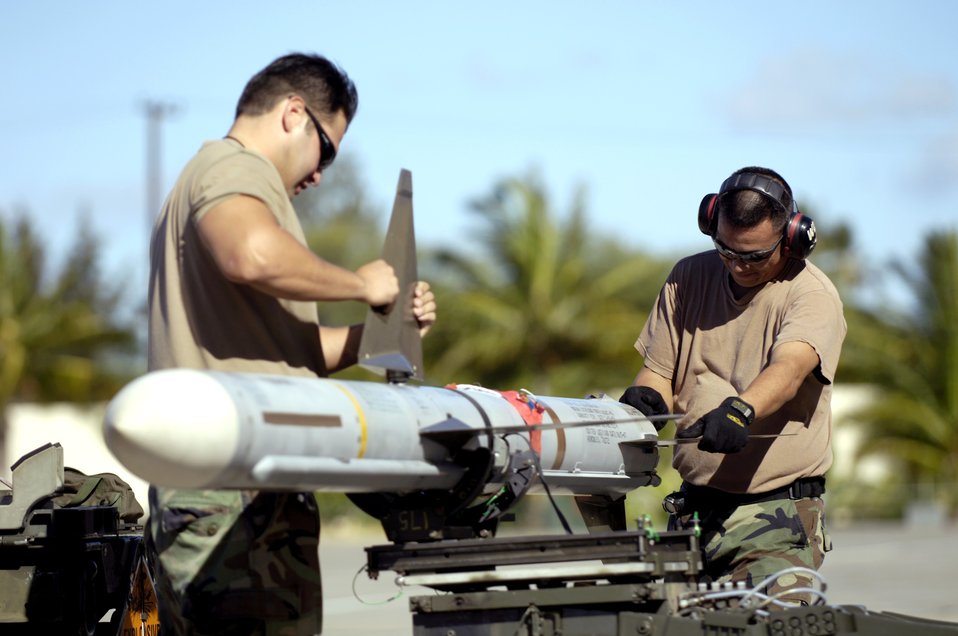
Total force at work in RIMPAC

Staff Sgt. Gabriel Coronado and Staff Sgt. Arthur Hamabata install the wings and fins on an AIM-7 Sparrow missile at Hickam Air Force Base, Hawaii, on July 16 during the Rim of the Pacific Exercise 2006. The Airmen are from the Hawaii Air National Guard's 154th Aircraft Maintenance Squadron.